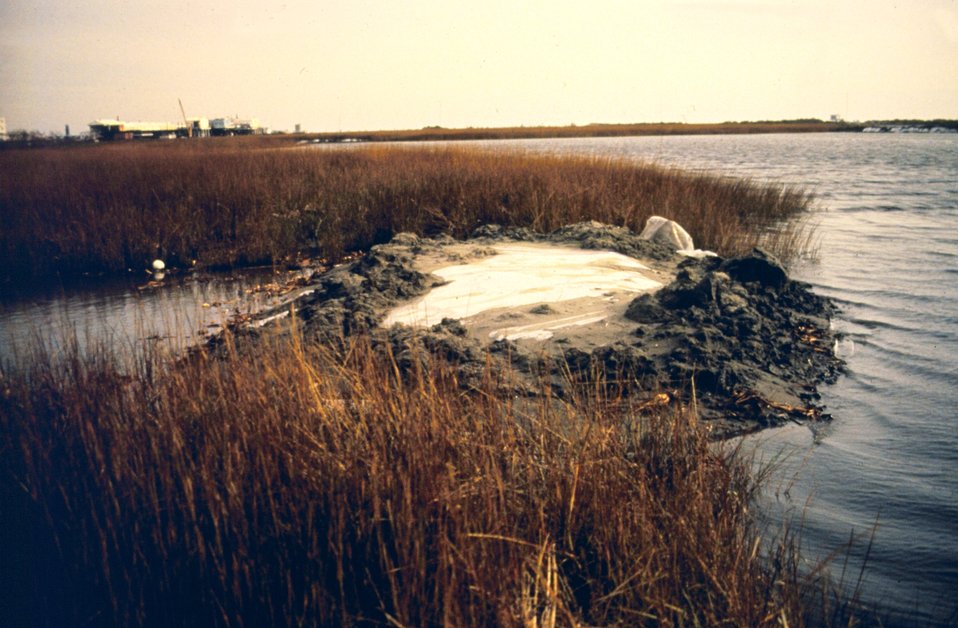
The Bay side of East Timbalier Island, oiled sediments after the blowout.